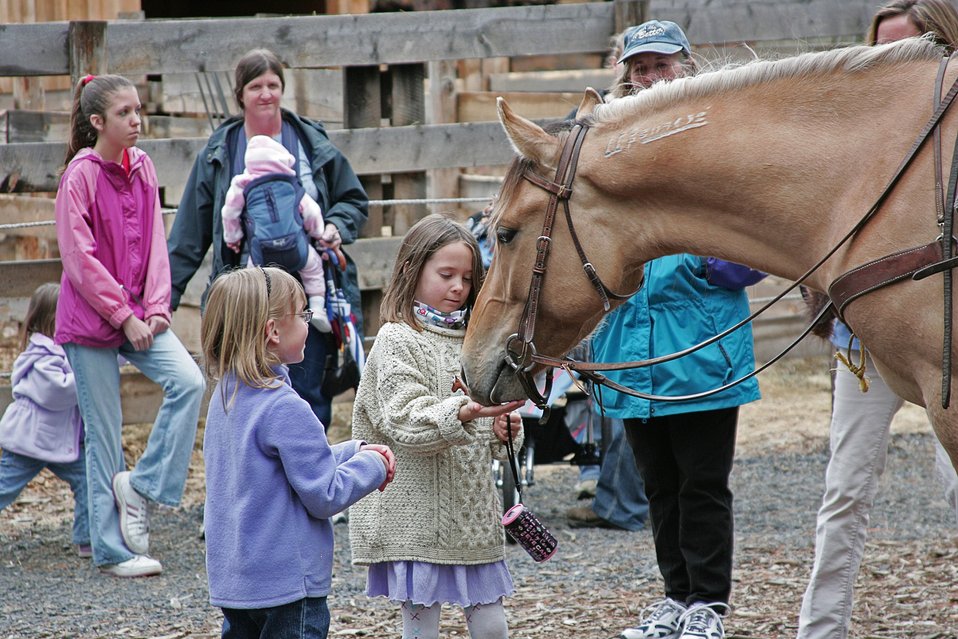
Spirit, a trained wild mustang from the Kiger Wild Horse Herd Management Area, makes new friends at the High Desert Museum in Bend, Oregon.